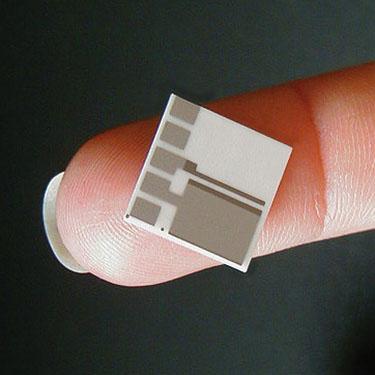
ARGONNE NATIONAL LABORATORY SCIENTISTS DEVELOPED LABORATORIES-ON-A-CHIP THAT CAN DETECT CHEMICALS, BACTERIA OR VIRUSES.

ANL IS CHANGING PRESENT TECHNOLOGY TO MEET HOMELAND SECURITY CHALLENGES. THE RESULTS HAVE LED TO DEVELOPMENT OF A NEUTRON DETECTOR, WHICH IS AN EARLY WARNING AND CRISIS MANAGEMENT COMPUTER SIMULATOR FOR DETECTING BIOLOGICAL AND CHEMICAL AGENTS FOR MASS TRANSIT AND SENSORS FOR BIOLOGICAL AND CHEMICAL AGENTS.